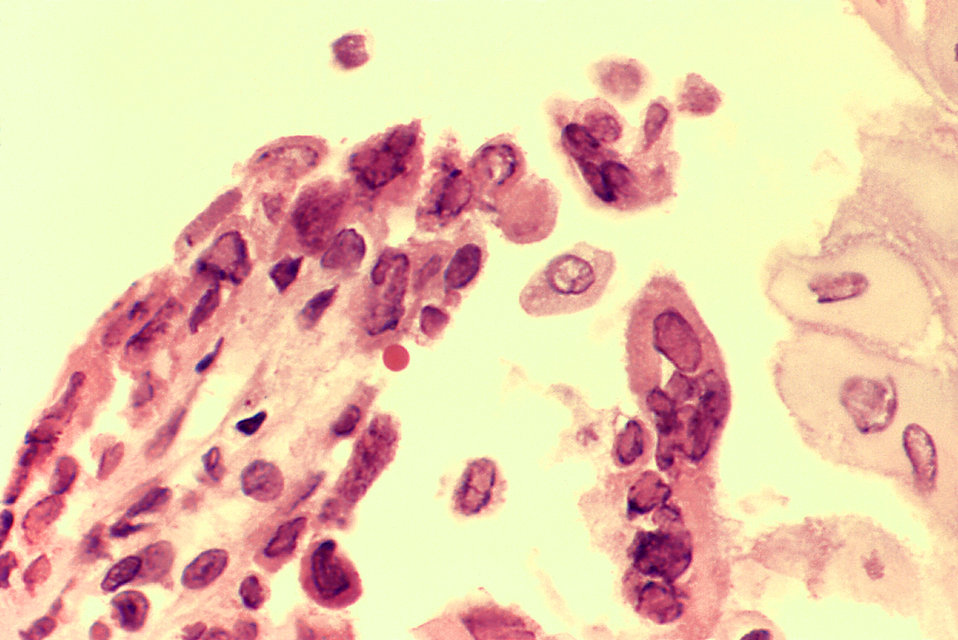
Ulcer due to active Herpes simplex virus infection in AIDS, esophagus.